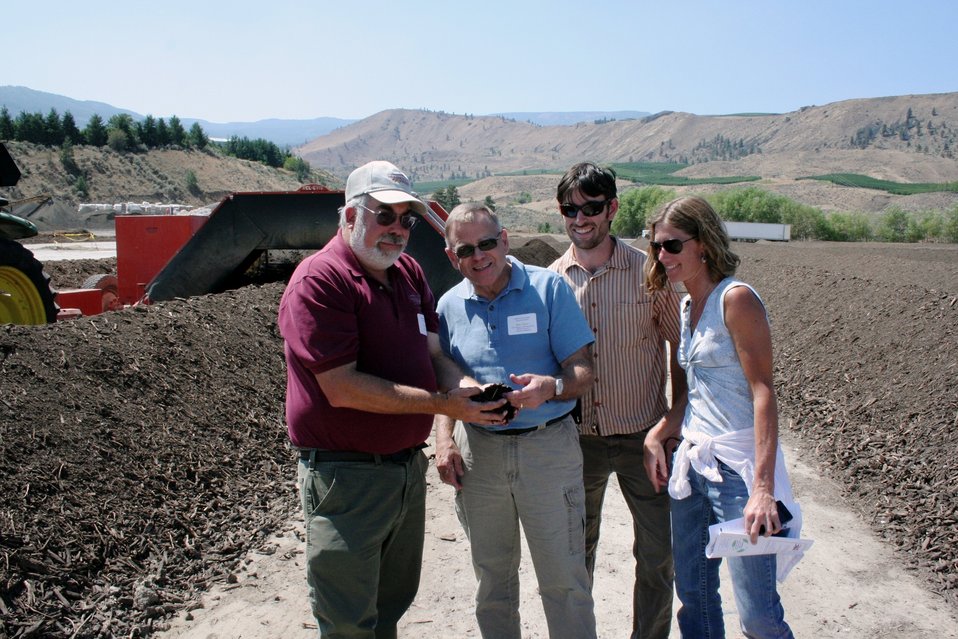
On the Road with Mike Taylor

From left: Andy Bary, a Washington State University research scientist, FDA Deputy Commissioner Michael Taylor, Nathaniel Lewis of the Washington state Department of Agriculture, and Gwendolyn Wyard of the Organic Trade Association examine compost at Stemilt Growers in Wenatchee, WA. Mike and colleagues started a five-day tour of the Pacific Northwest on Sunday, Aug. 11, 2013 -- visiting Idaho, Oregon and Washington -- to get a first-hand look at produce production and irrigation operations, and to discuss the proposed Produce Safety Rule with growers, food industry representatives and state officials. For more about Mike's multi-region tour, read these FDA Voice blog posts:

• Hearing the Concerns of Maine Growers Striving for Agricultural Diversity
• On the Road with Mike Taylor: Touring the Pacific Northwest
• On the Road with Mike Taylor, Day 2: Frank Talk in Farm Country
• On the Road with Mike Taylor, Day 3: Families and Partnerships
• On the Road with Mike Taylor, Day 4: Looking to the Future